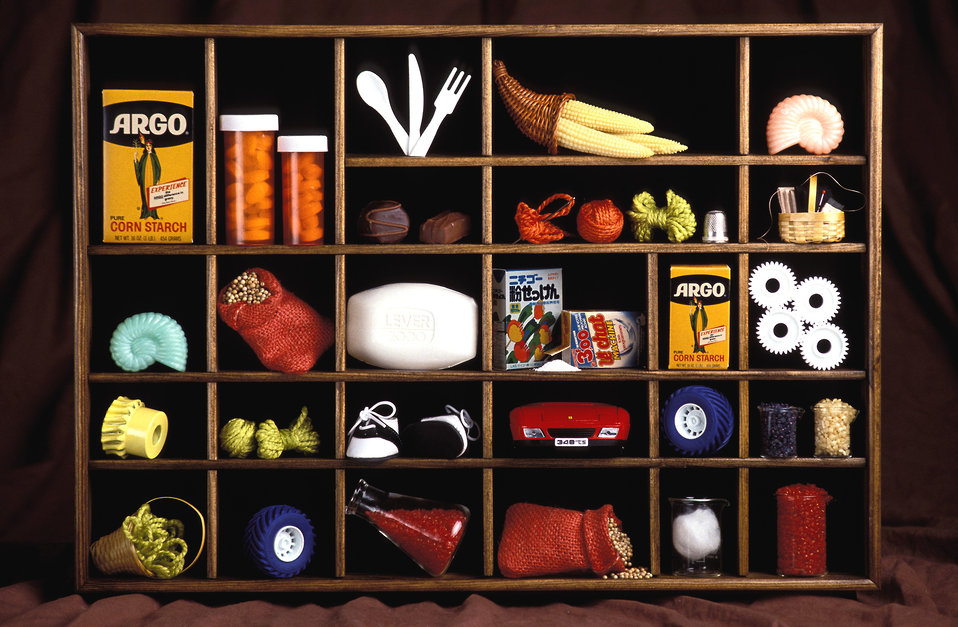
The displayed items represent the U.S. Department of Agriculture’s (USDA) Agricultural Research Service (ARS) capabilities to create new uses for agriculture products.